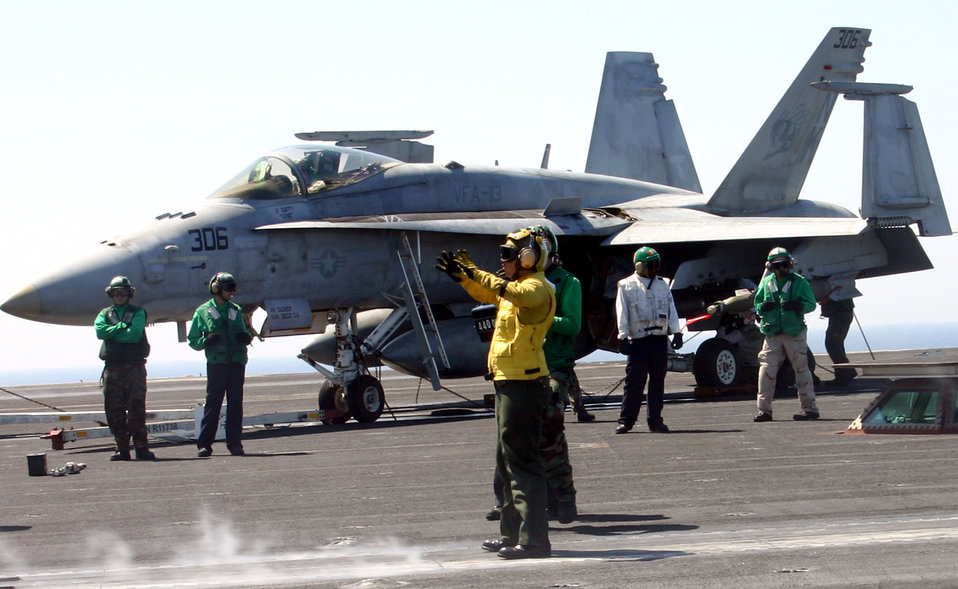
Same fight by land or sea

Sailors marshal an F/A-18 Hornet aircraft into position in preparation for take-off Friday, March 31, 2006, aboard the USS Ronald Reagan. F/A-18s and other aircraft are deployed with the ship to the Arabian Gulf in support of operations Iraqi Freedom and Enduring Freedom.